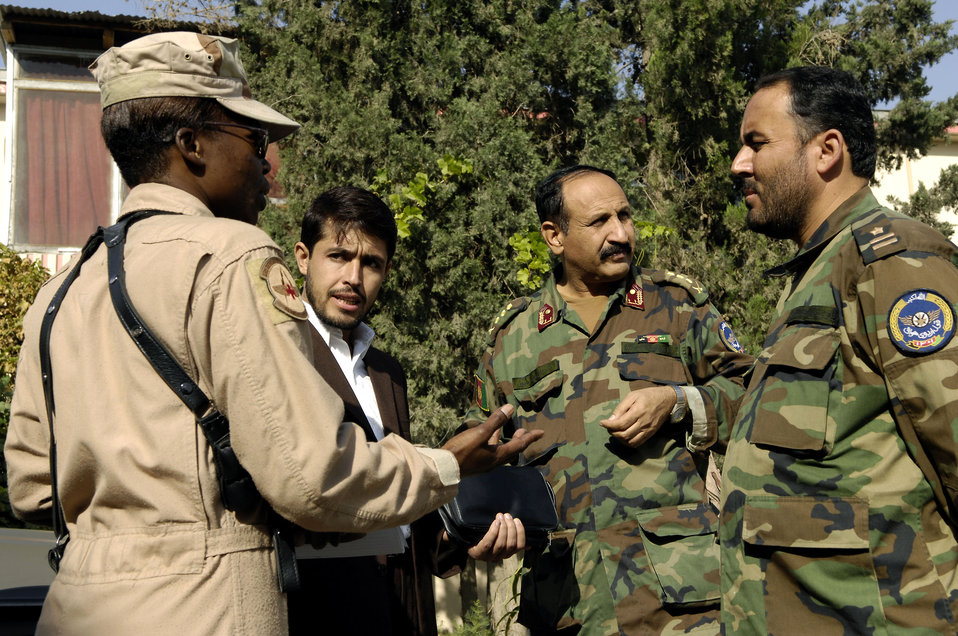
Airmen help Afghans stand up flight medicine clinic

Tech. Sgt. Janet Wilson goes over the specifics of a training exercise with senior medical members Oct. 20 at the Afghan national army air corps clinic in Kabul, Afghanistan. The exercise was designed to help keep the medical staff here proficient in the skills needed to do their jobs. Sergeant Wilson, a member of the air corps advisers group, is deployed from Pope Air Force Base, N.C.